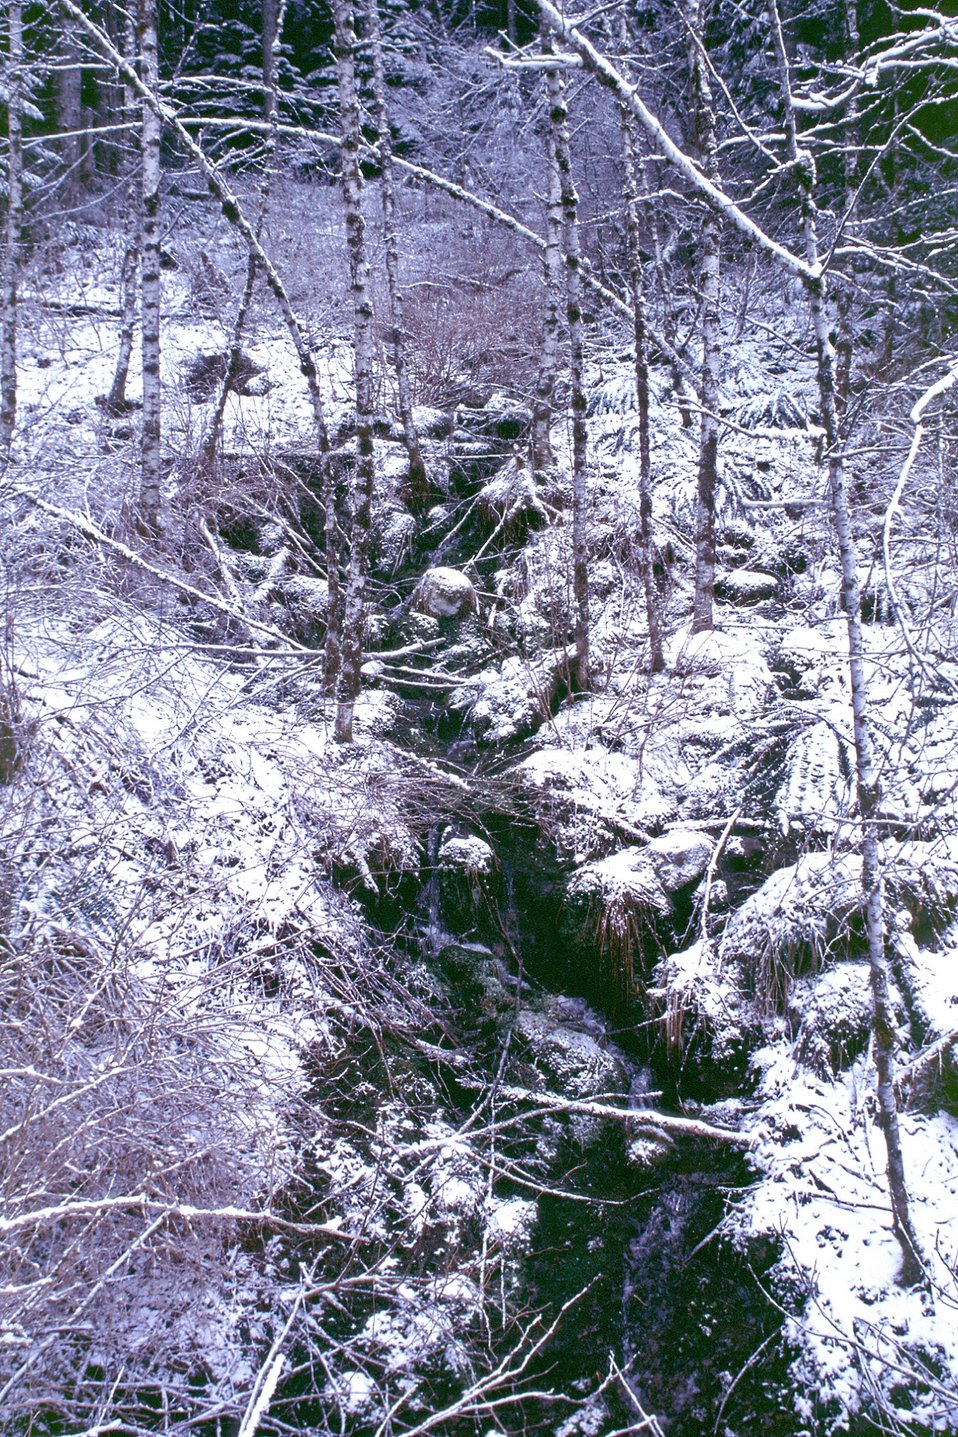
Mid Winter forest scene in the Mollala Corridor.